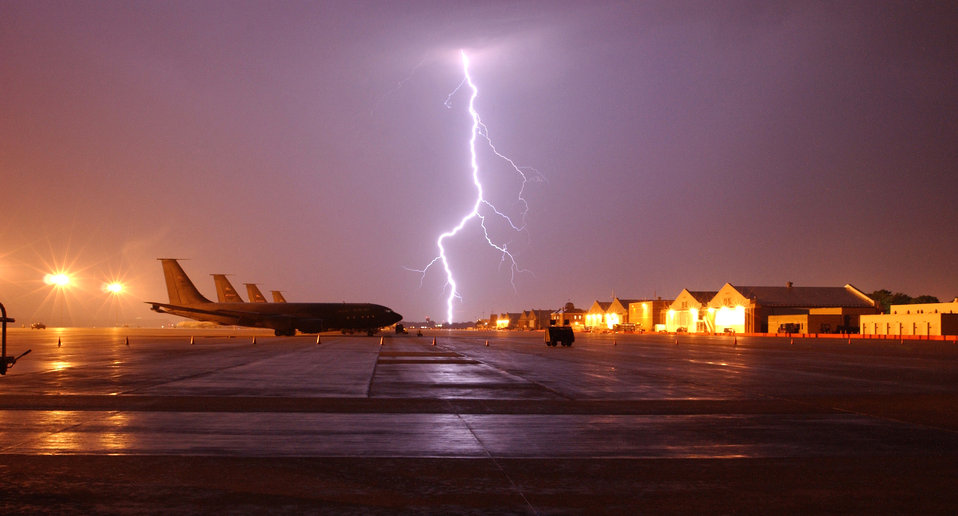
Lightning crashes

SELFRIDGE AIR NATIONAL GUARD BASE, Mich. -- Lightning strikes on the far side of a row of KC-135 Stratotankers assigned to the 927th Air Refueling Wing here.